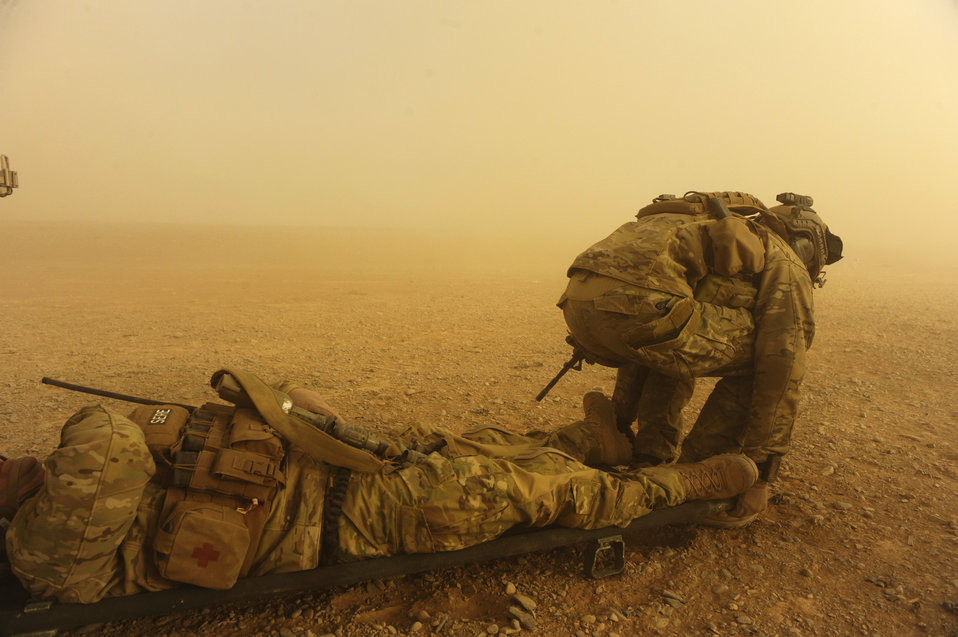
CSAR Airmen airlift wounded Soldier

Captain Nick Morgans and Tech. Sgt. Anthony Wood (not pictured) prepare to move a simulated casualty to load him onto an HH-60G Pave Hawk during a mass-casualty scenario Dec. 24, 2010, near Kandahar, Afghanistan. The scenario was planned as part of Sgt. Wood's qualification to become an element leader. Captain Morgans and Sergeant Wood are both assigned to the 46th Expeditionary Rescue Squadron.